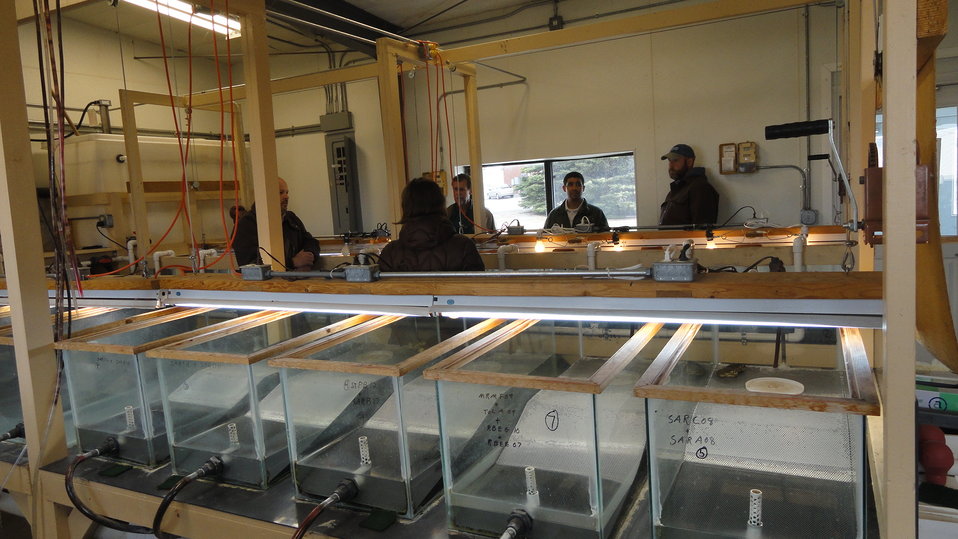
Visiting Saratoga National Fish Hatchery

In April of 2014, regional office employees visited Saratoga National Fish Hatchery to learn more about its efforts towards recovering the Wyoming toad (Bufo baxteri).

The hatchery adopted a unique role in becoming the first unit in the National Fish Hatchery System to become involved in rearing endangered amphibians. The Wyoming toad was a common sight on areas of the Laramie Plains, Albany County, Wyoming, into the early 1970s but the species' populations crashed in the mid-1970s. The Wyoming toad was listed as endangered by the U.S. Fish & Wildlife Service in January 1984. Found only in southwestern Wyoming, the Wyoming toad is considered the most endangered amphibian in North America. The hatchery maintains a captive population for breeding, rearing, and refugia, and the offspring from this program will be used for reintroduction efforts.